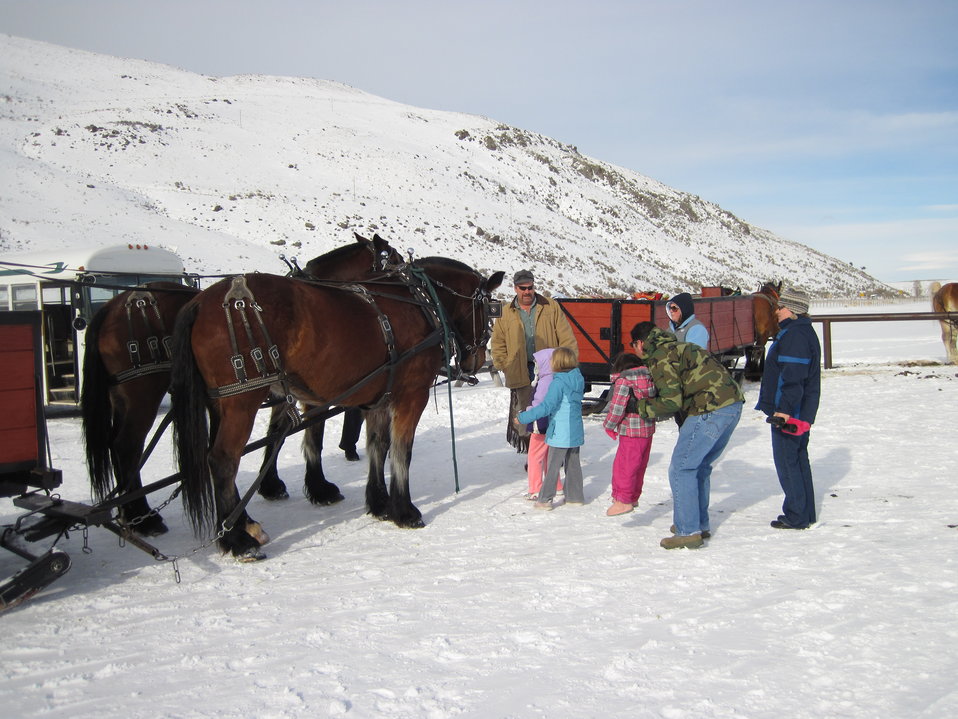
End of the Ride

Many passengers enjoy ending their sleigh ride by meeting and thanking the team of horses that made their ride possible.